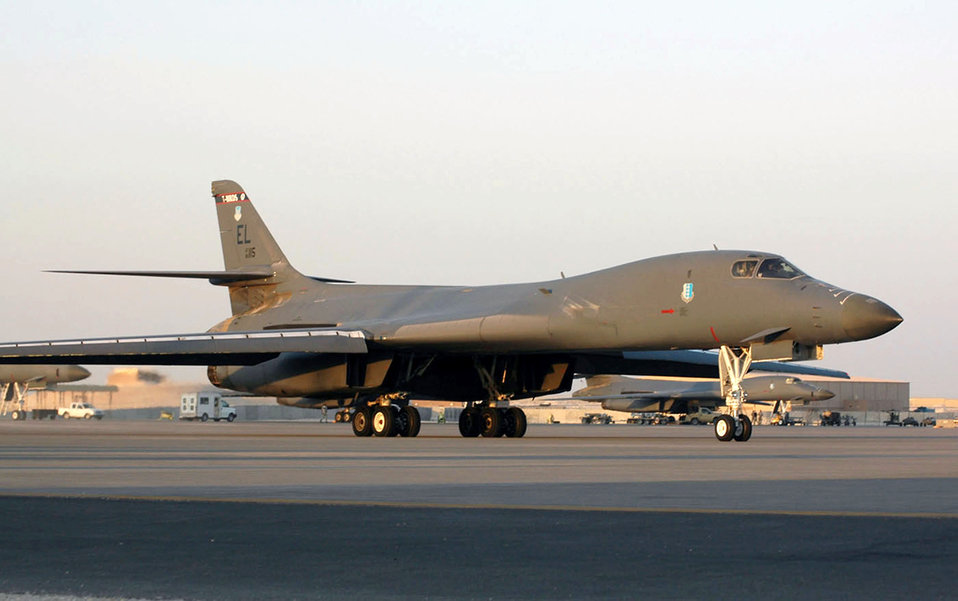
Airpower Summary for July 16, 2007

A B-1B Lancer at a forward deployed location in Southwwest Asia prepares for a mission. Lancers support both Operation Enduring Freedom and Operation Iraqi Freedom.